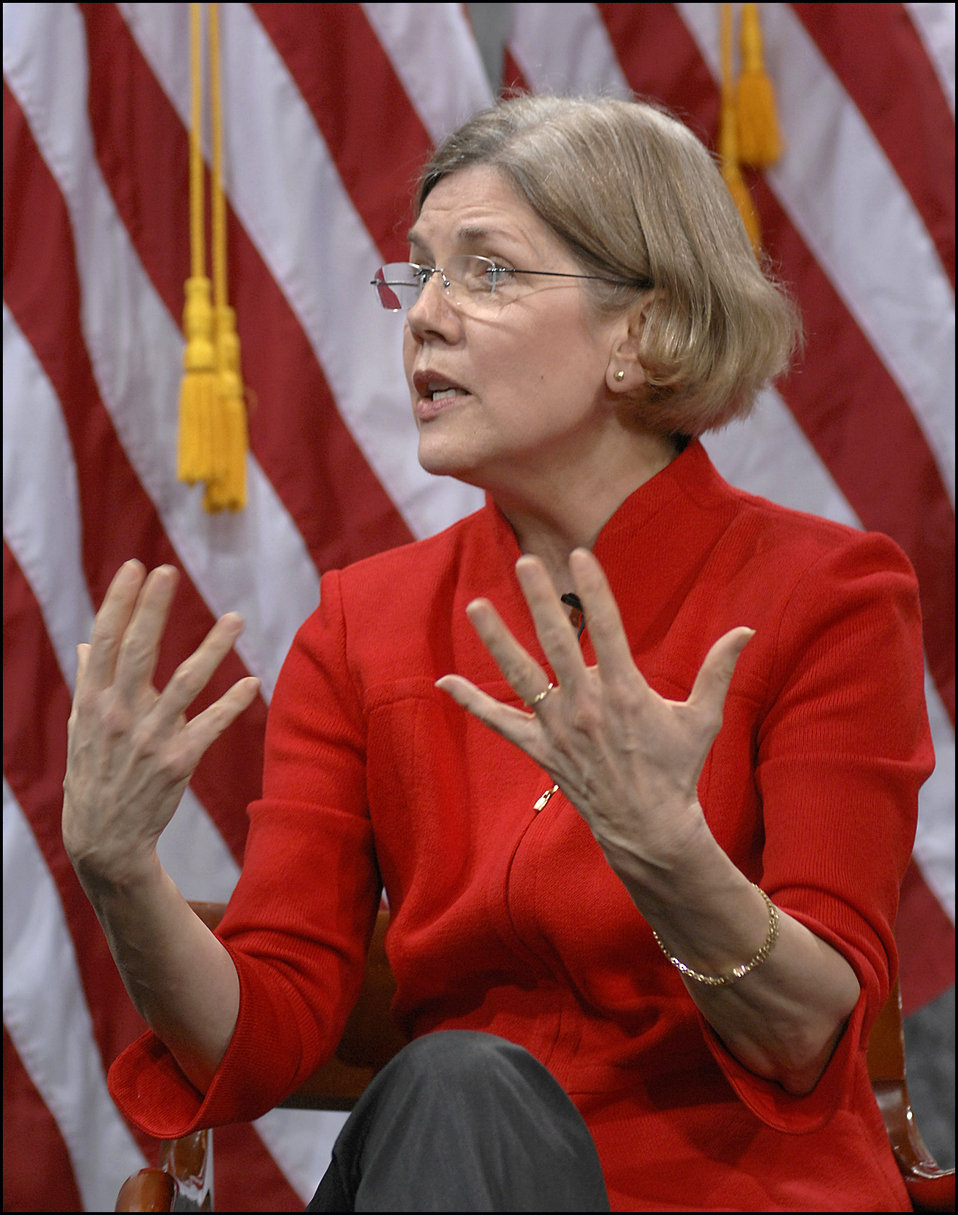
Women in Finance Symposium, 03/29/2010

Congressional Oversight Panel Chair Elizabeth Warren speaks at the Women in Finance Symposium, March 29, 2010.